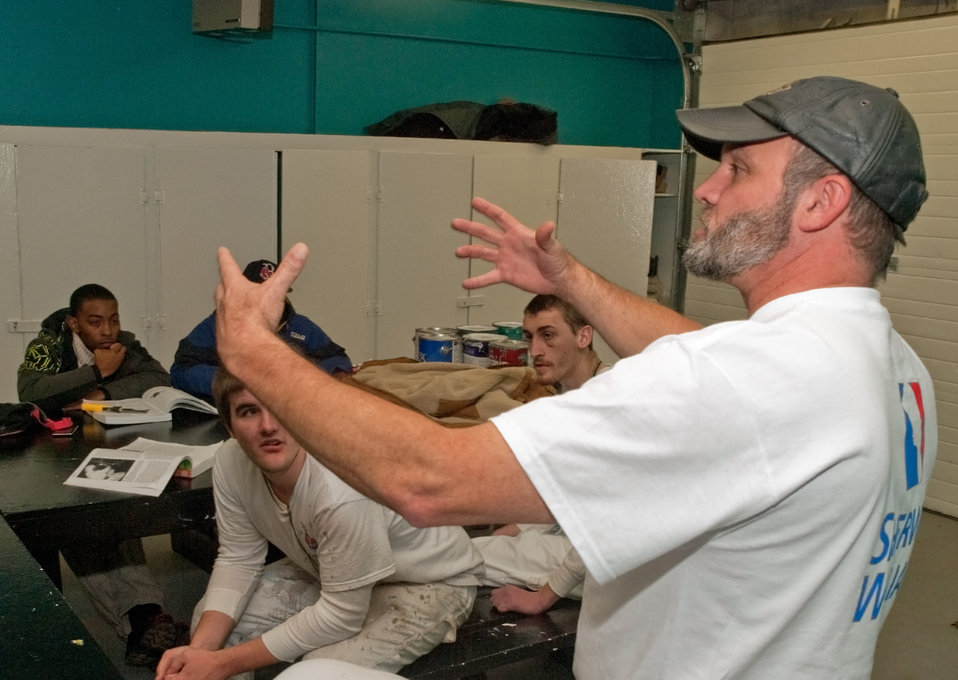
Painting instructor Dave Simons in front of his students oat the Job Civilian Conservation Corp Center (JCCCC) in Harpers Ferry, WV on Nov. 8, 2012. The U.S. Forest Service manages 28 Job Corps Civilian Conservation Centers.